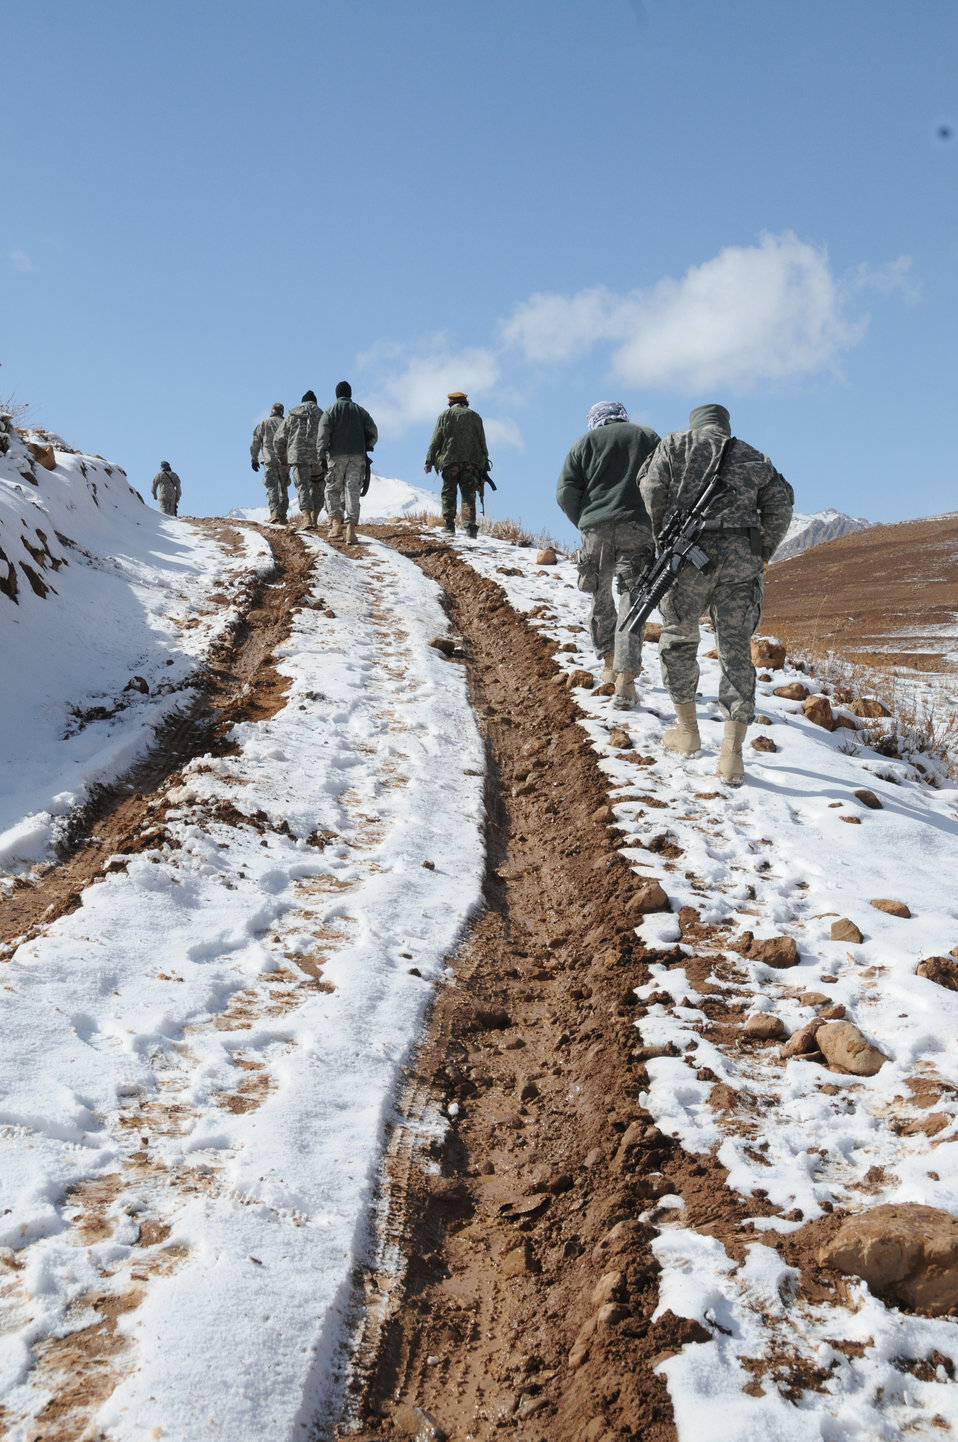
Hiking downrange

Members of Provincial Reconstruction Team Ghazni and Afghan National Police walk up a hill after their vehicles became stuck in the mud in the Nawur District, Ghazni Province, Afghanistan. Members of the PRT visited the Nawur District to perform quality assurance quality control on a collapsed karza and two comprehenisve health clinics.